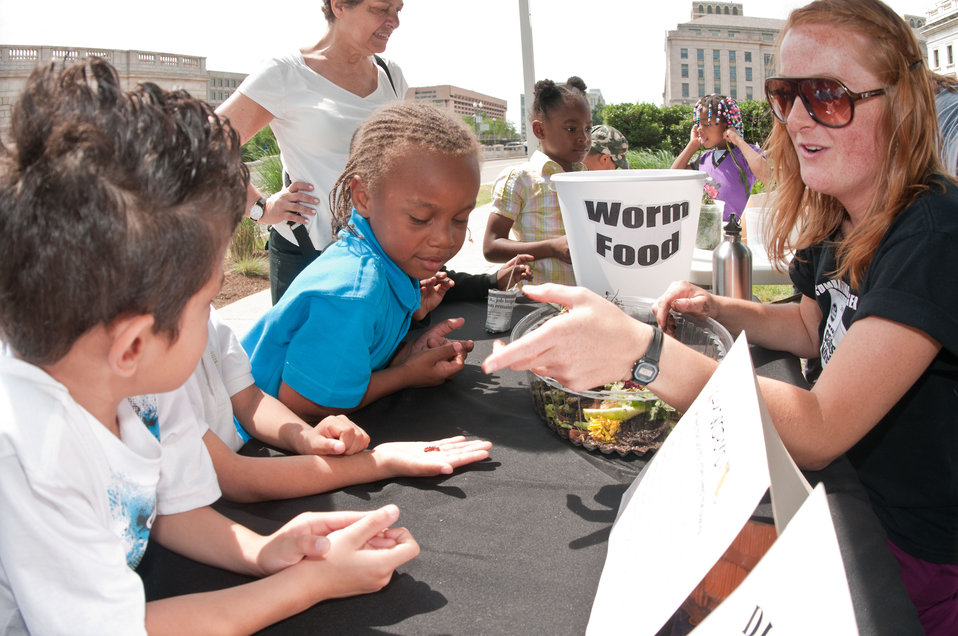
Joelle Johnson (right) teaches students from Powell Elementary School in Washington, DC what to feed worms to help plants grow during the opening day of the U.S. Department of Agriculture (USDA) Farmers Market and the official kick off of the People's Garden Friday activities on Friday, June 3, 2011 in Washington, DC. More than 200 children participated in activities at several learning stations teaching them how to make planter pots out of household trash items; make salsa; experience the taste and smell of herbs; then search for those plants in the bed of Truck Farm, a mobile garden; and have a guided tour of the People’s Garden, and learn about the importance of worms in a garden. The adjacent USDA Farmers Market is located at the corner of 12th Street and Independence Avenue and will be open every Friday from 10:00 a.m. - 2:00 p.m. through November 18th. Special complimentary events will be happening every Friday at the market and at the People's Garden all season.